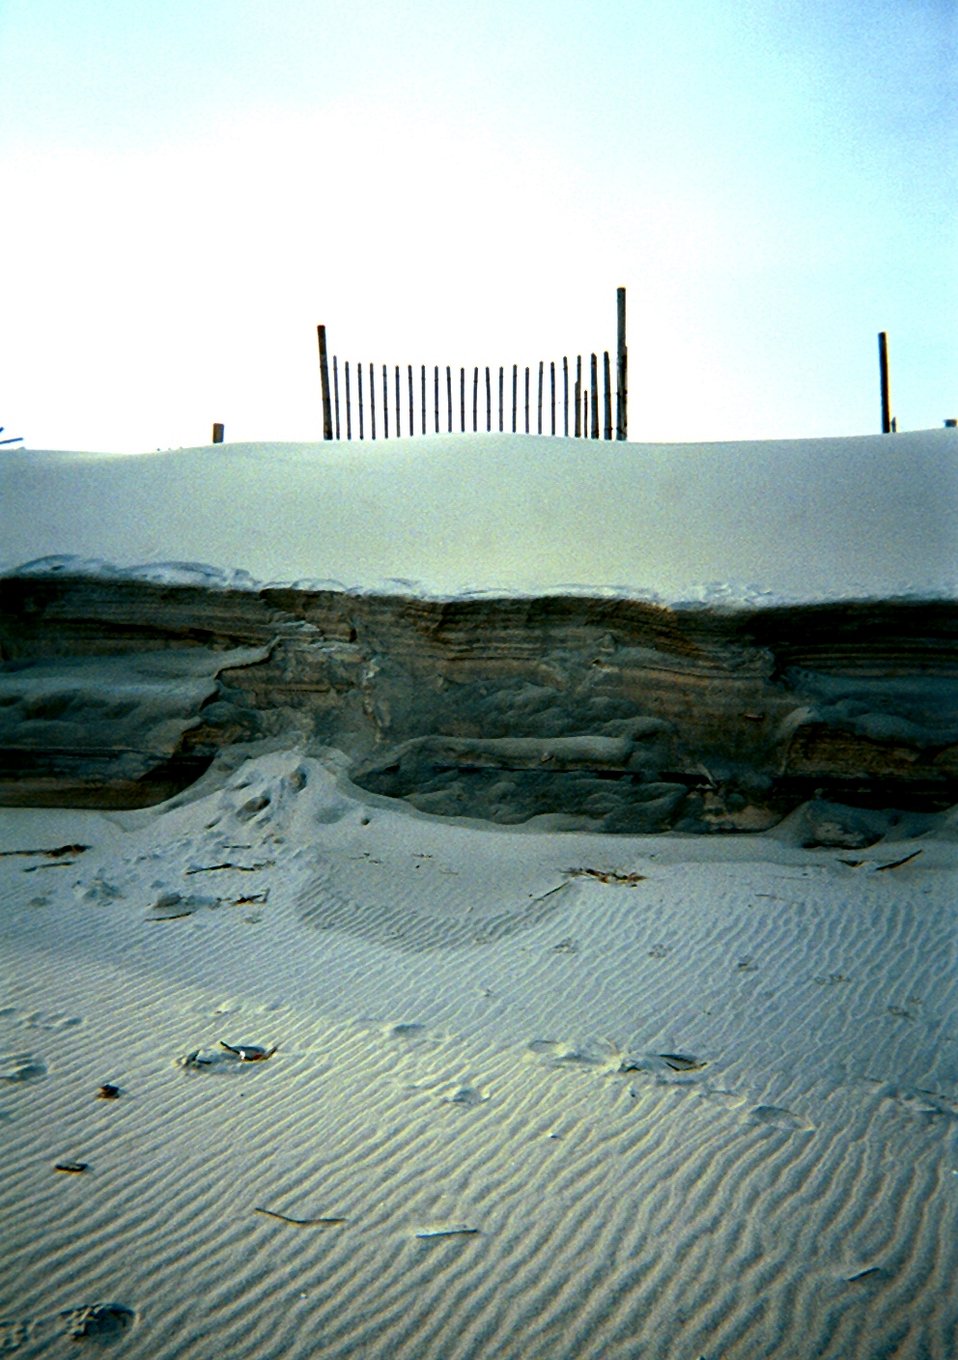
Horizontal sand laminations show along eroding dune. Wind ripples below sand laminations are oriented perpendicular to sand ledge.